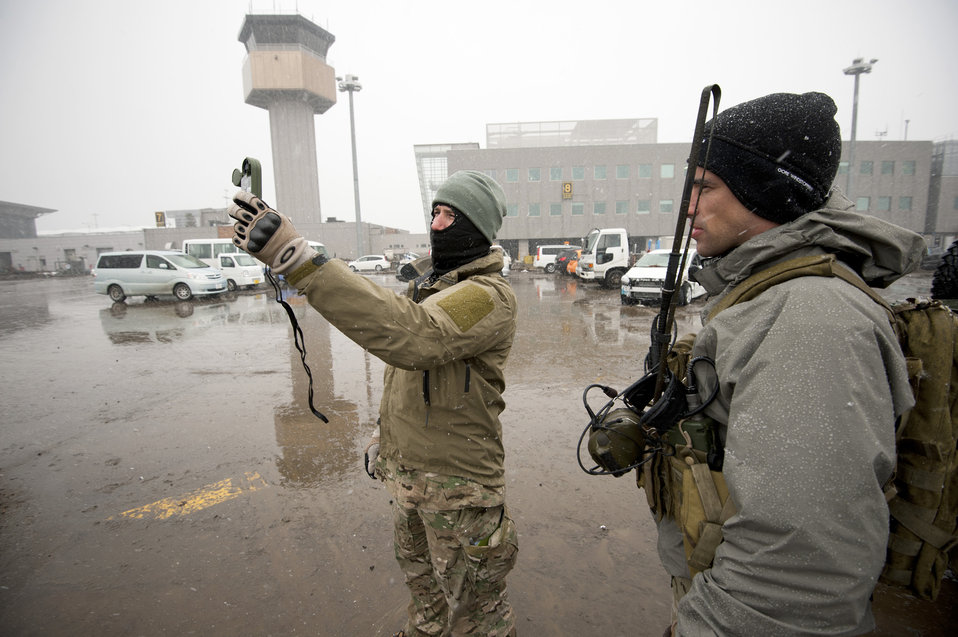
MC-130H Combat Talon II arrives at Sendai Airport

Airmen assigned to the 320th Special Tactics Squadron check the wind speed and temperature March 16, 2011, at Sendai Airport, Japan.